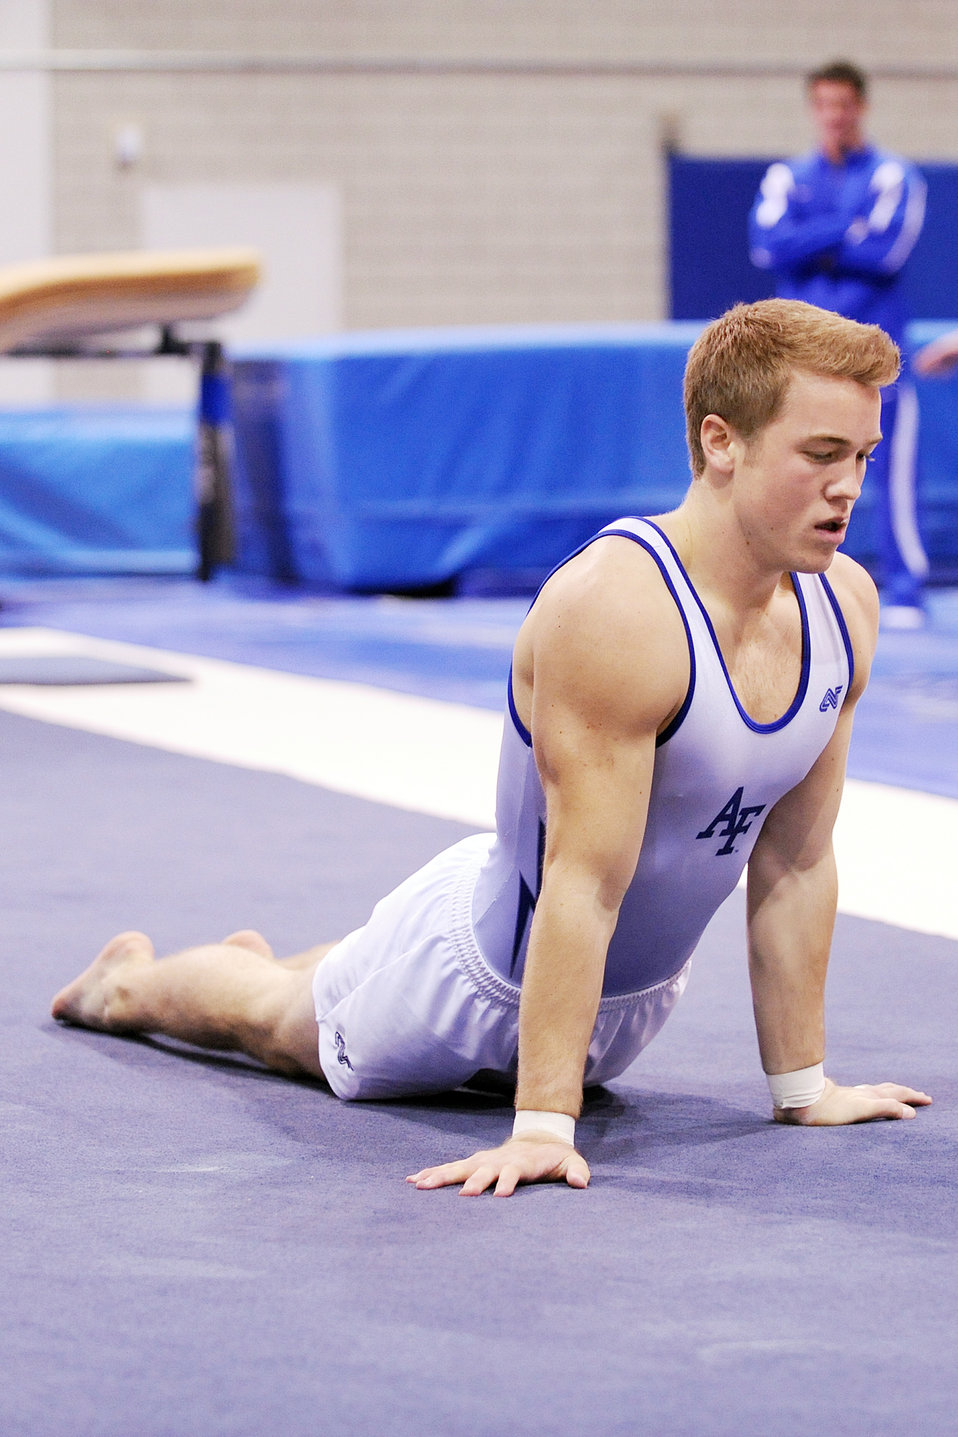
Academy gymnasts compete in Blue-Silver invitational

U.S. Air Force Academy Junior Nash Mills competes in the floor exercise during the second annual Blue-Silver Invitational at the Cadet West Gym Dec. 5, 2009. Cadet Mills posted the team's top mark on the pommel horse and parallel bars. The Air Force gymnastics